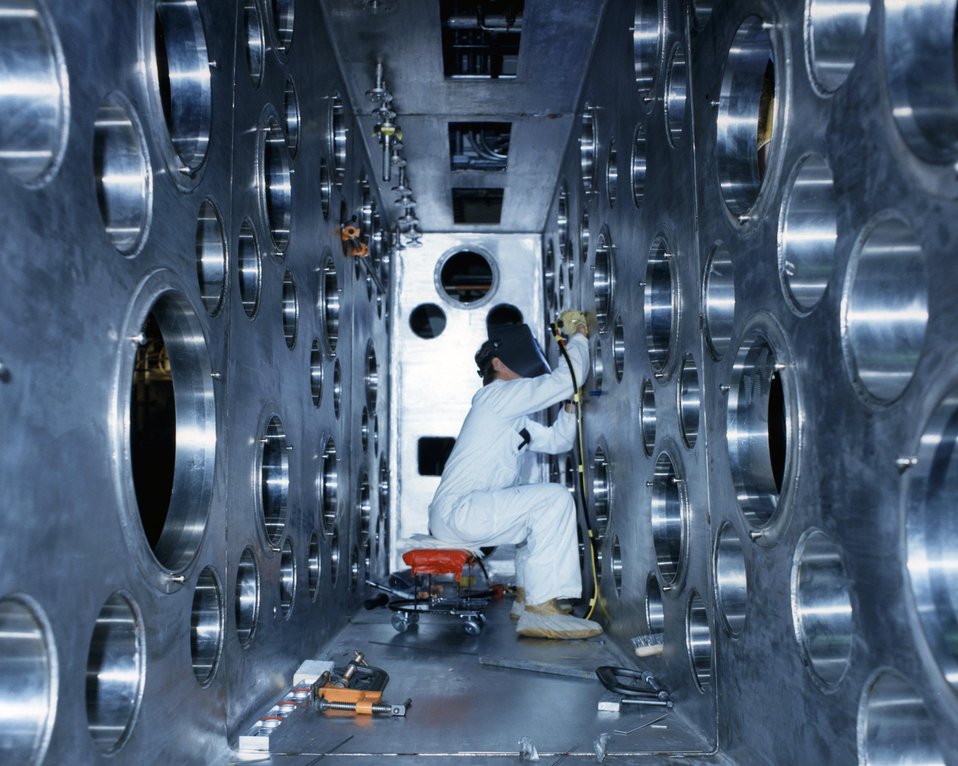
TECHNICIAN MAINTAINING AND REPAIRING IN BUILDING 771.